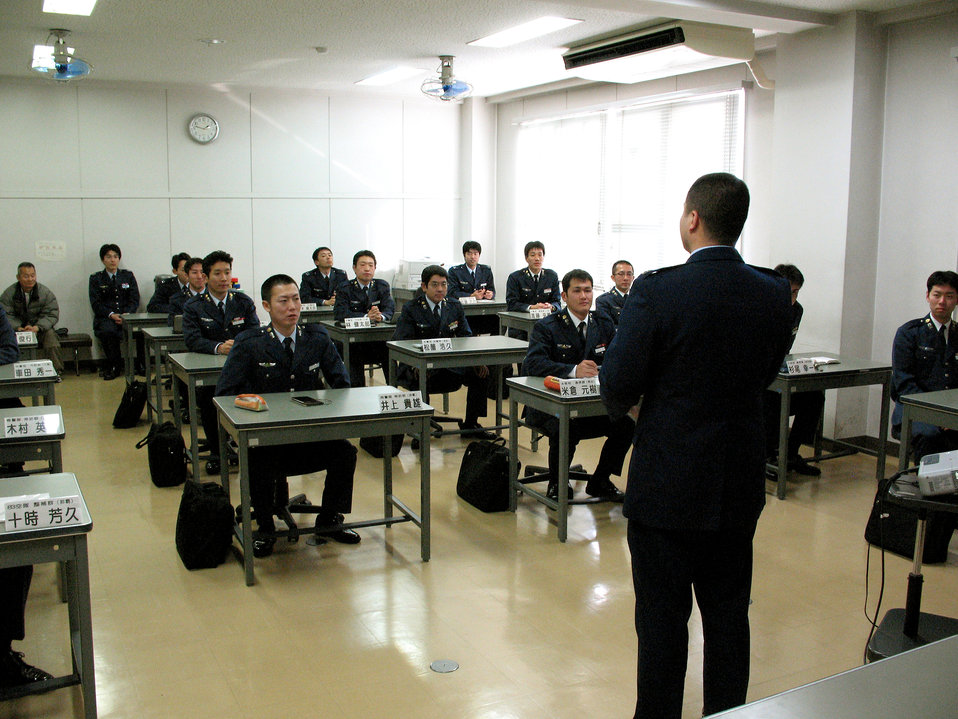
Captain shares language with Japanese airmen

Capt. Joseph Cook teaches English and offers an introduction to U.S. Air Force communication techniques to Japanes Air Self Defense Force officers and airmen Feb. 1 at Kumagaya Air Base in Japan. Captain Cook is the only American stationed here as part of the Japanese Personnel Exchange Program.